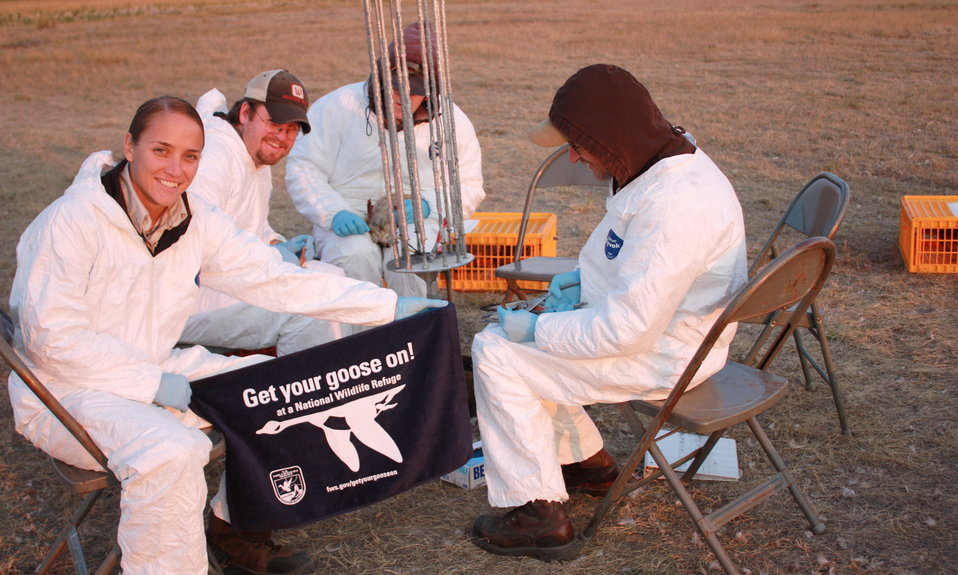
GYGO! - Duck Banding Style